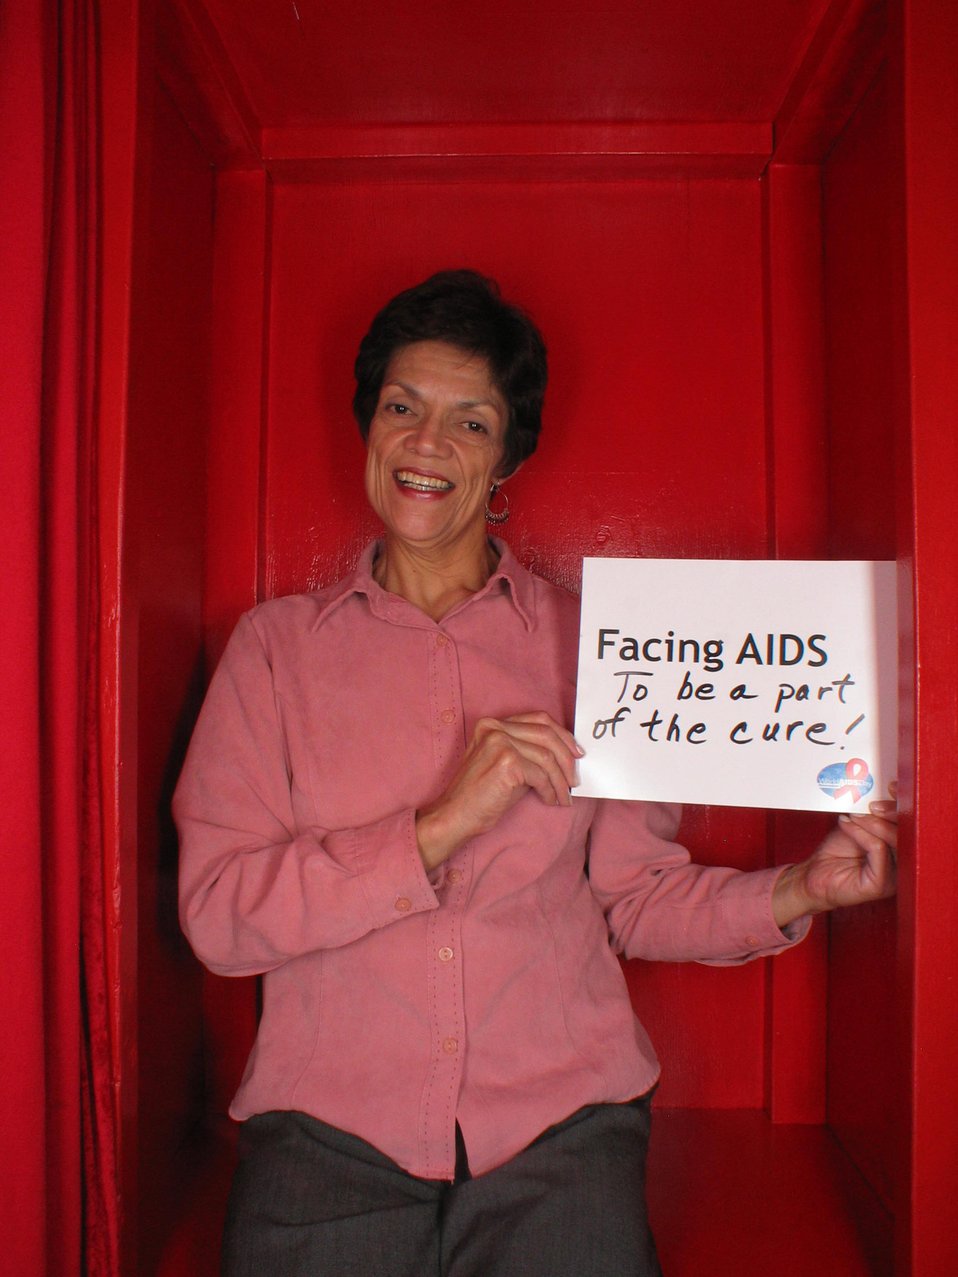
Facing AIDS to be a part of the cure!